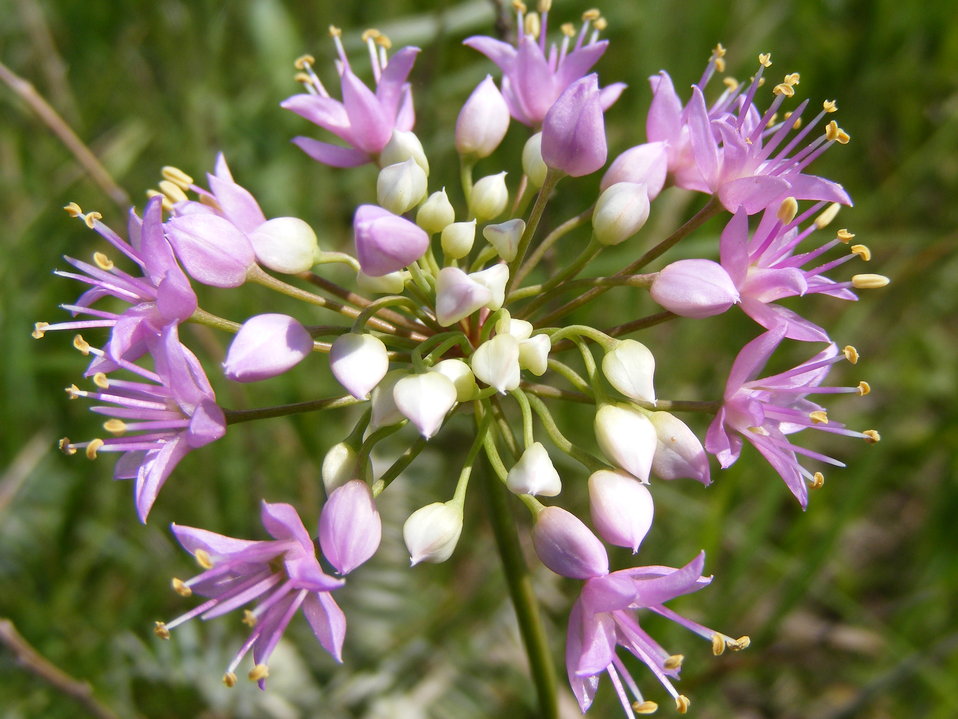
Wild Onion

A beautifully delicate prairie flower with an edible and odiferous onion like bulb. Can be confused with the deadly deathcamas bulbs which are odorless.